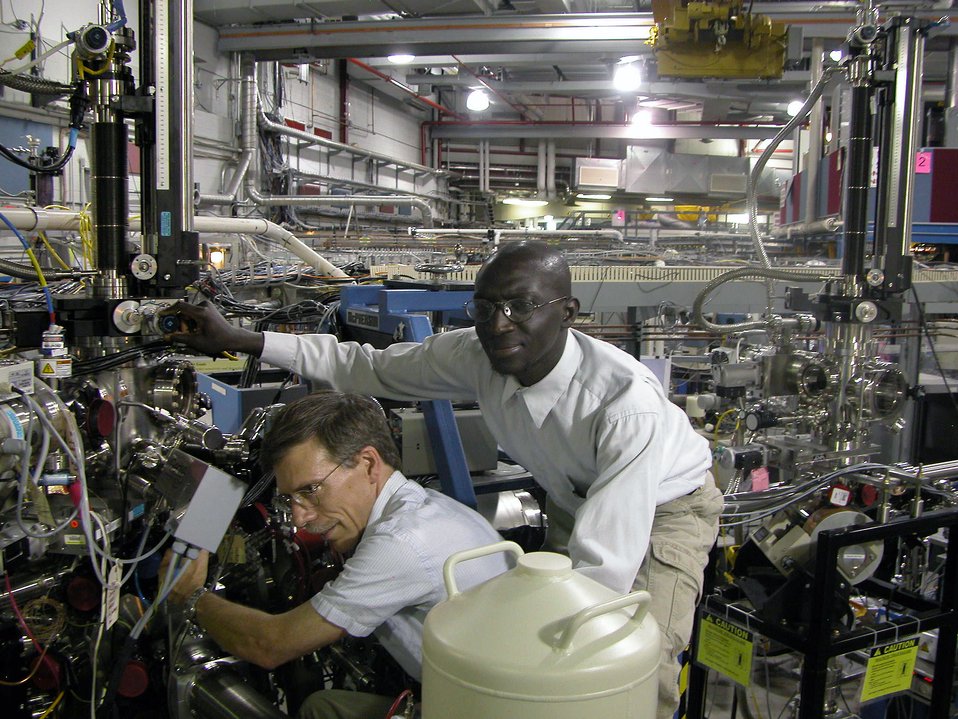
A Greener Antiwear Additive for Engine Oils

NIST materials scientists Cherno Jaye (r.) and Dan Fischer adjust a sample chamber for NIST's soft x-ray materials characterization beamline at the National Synchrotron Light Source.